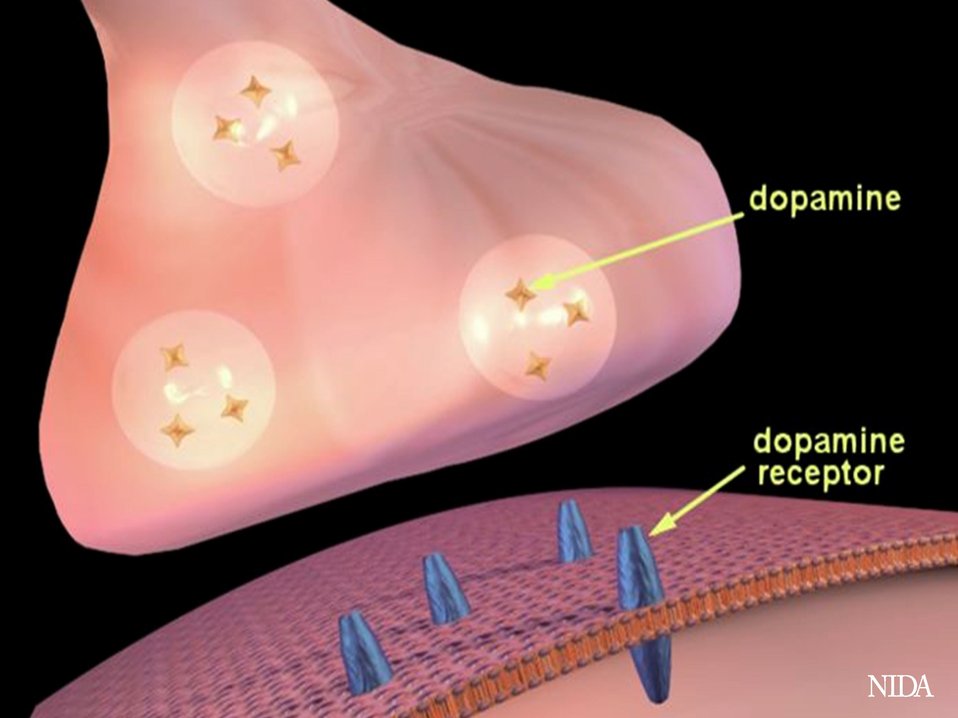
Dopamine Uptake

This slide shows how neurotransmission works specifically for dopamine.